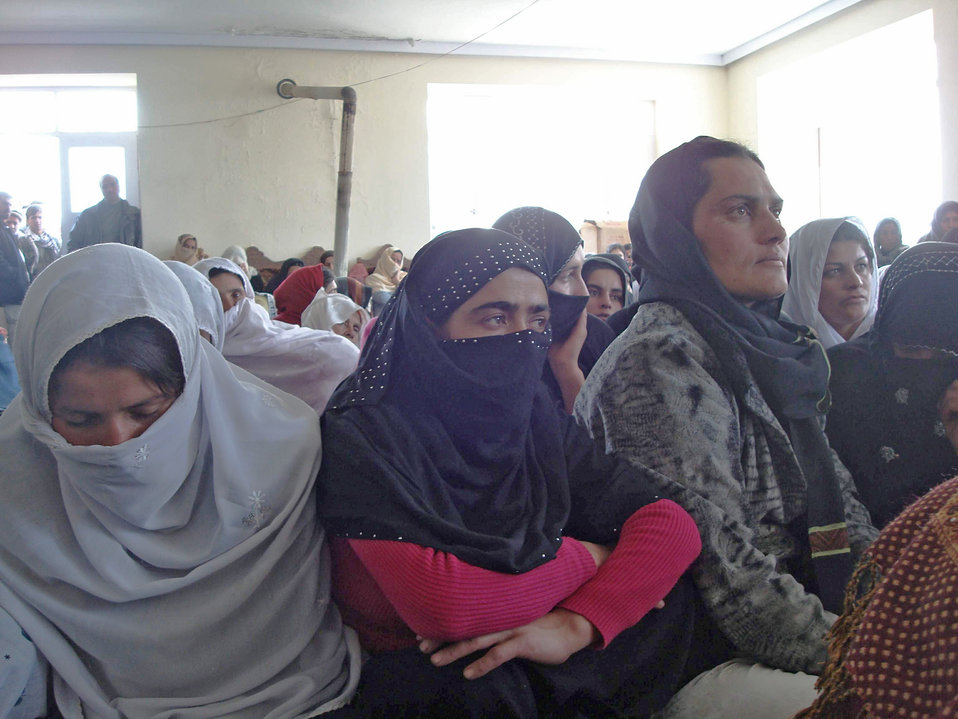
NCO speaks at International Women's Day event

Nearly 125 women and girls listen to guest speakers during Panjshir's International Women's Day celebration March 8 at the Astana Guesthouse in Bazarak District in Afghanistan.